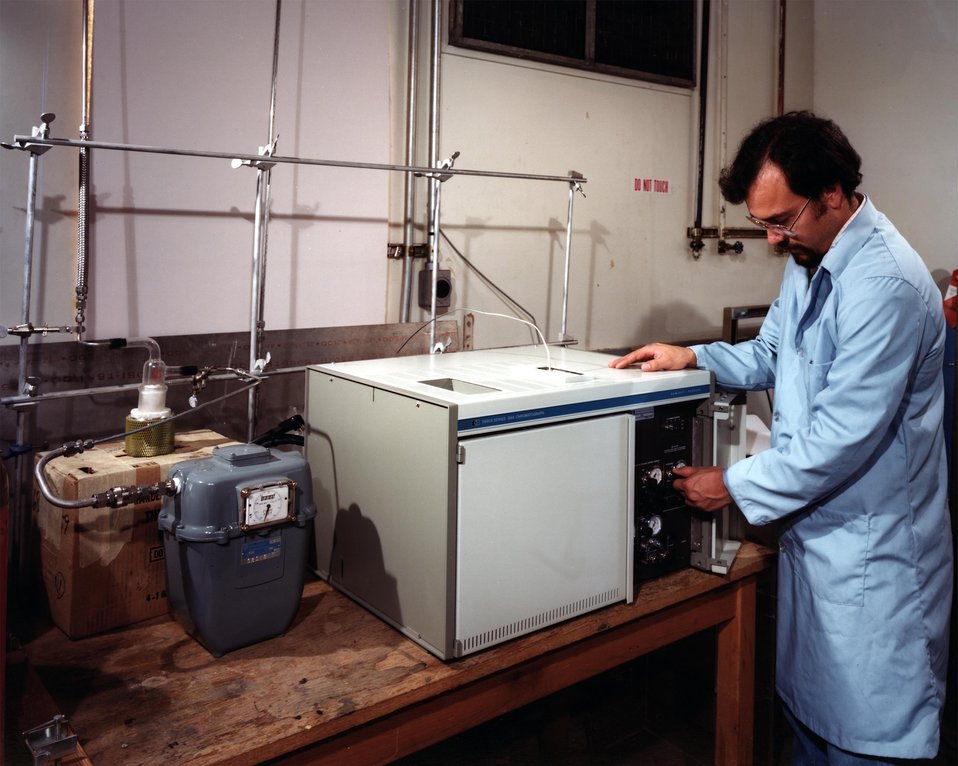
TECHNICIAN USES THE OFF-GAS ANALYZER OF THE BIOMASS LIQUEFACTION P.E.U.

THE PROCESS EVALUATION UNIT IS USED TO TEST VARIOUS METHODS OF CONVERTING BIOMASS INTO FUEL OIL. ONE OF THE LIQUEFACTION METHODS INVOLVES REACTING THE BIOMASS WITH CARBON MONOXIDE AND HYDROGEN UNDER HIGH TEMPERATURES AND PRESSURES IN THE PRESENCE OF CATALYSTS.